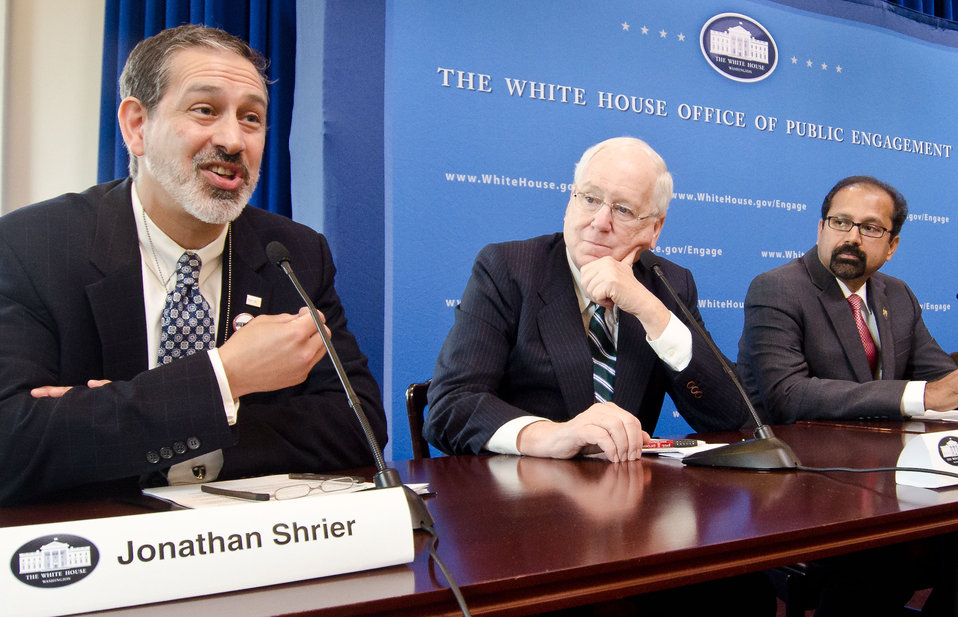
U.S. Department of State Global Food Security Acting Special Representative Jonathan Shrier moderated the panel of honorees who’s work focuses on international hunger efforts to reduce hunger and increase food security in the U.S. and internationally at the White House Champions of Change Strengthening Food Security at Home and Abroad Event held at the White House on Thursday, September 6, 2012, in Washington, D.C.